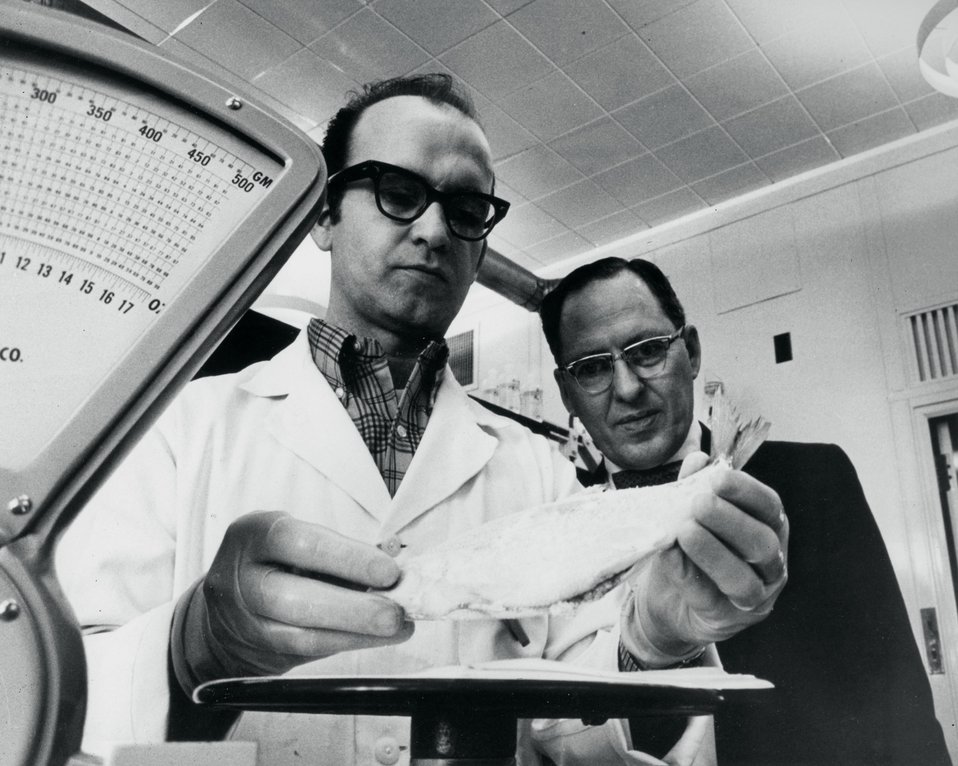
A fish taken from Lake Michigan is 'weighed-in' at Argonne. C.1970